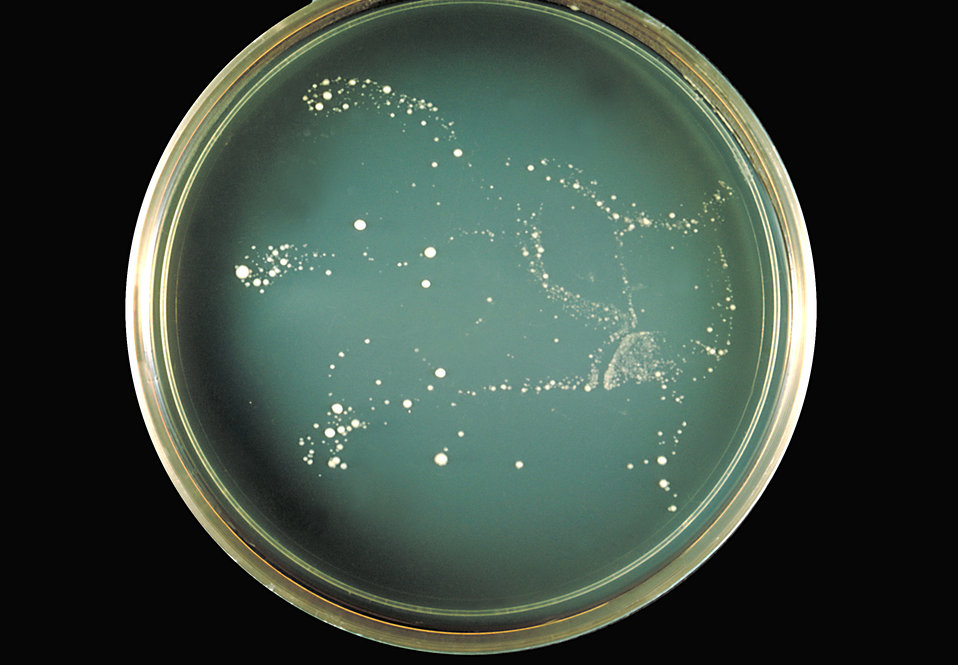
This is a plate culture of the fungus Cryptococcus neoformans, strain 7H10, grown at 37�C.